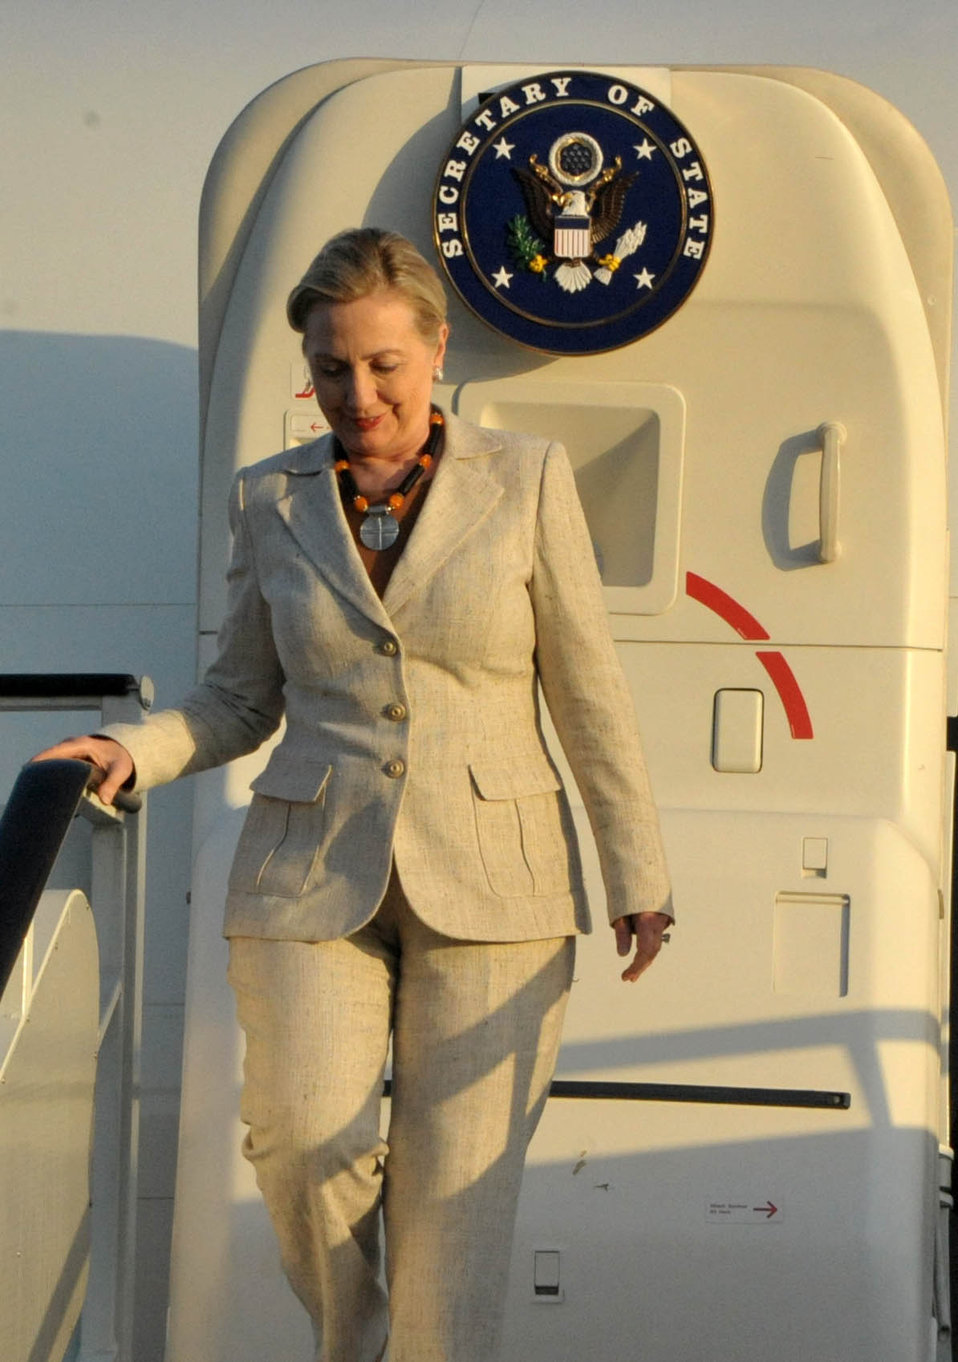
Secretary Clinton Steps Off the Plane

U.S. Secretary of State Hillary Rodham Clinton steps off the plane after arriving in Dar es Salaam, Tanzania, on June 11, 2011.